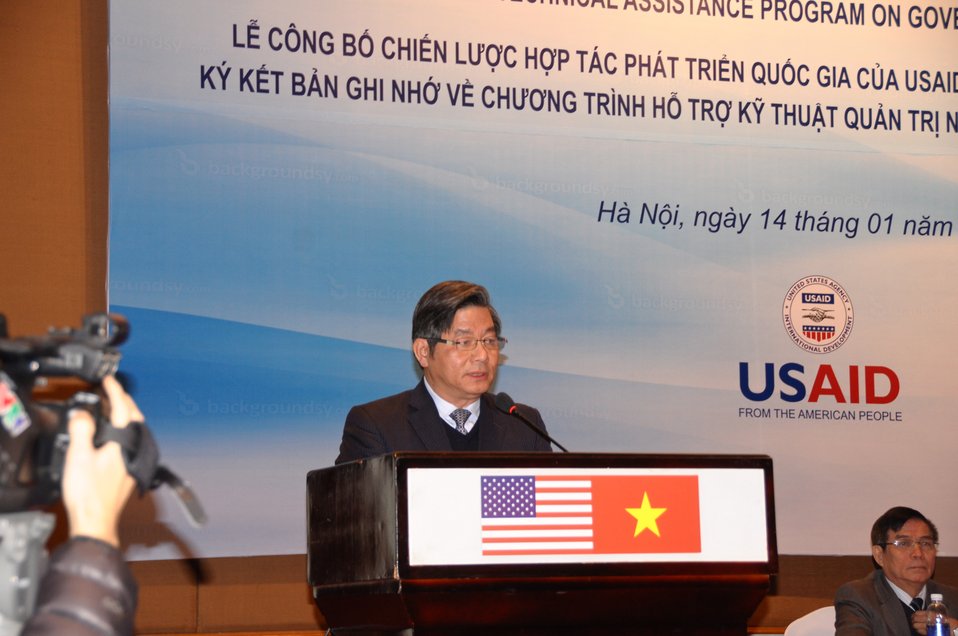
Vietnam's Minister of Planning and Investment Bui Quang Vinh speaks at the event.